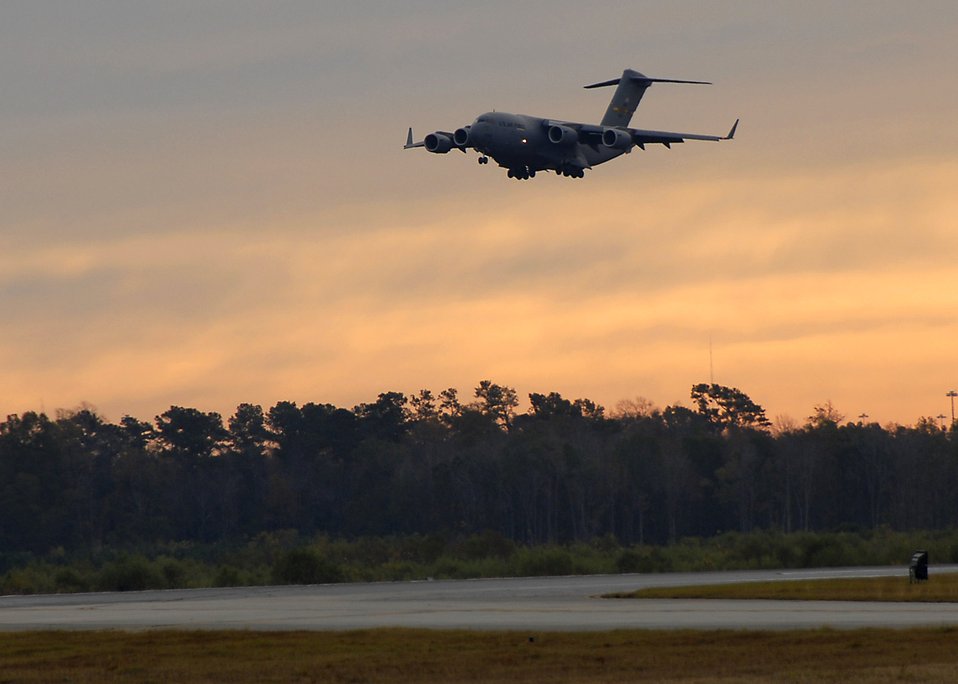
In the dawn's early light

A C-17 Globemaster III from the 315th Airlift Wing lands in the early morning hours at Charleston Air Force Base, S.C.